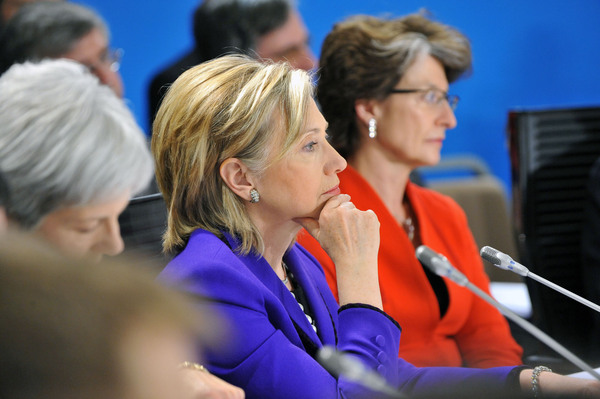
Secretary Clinton Next to Deputy Director Claude-France Arnould

U.S. Secretary of State Hillary Rodham, seated beside Claude-France Arnould (right), Deputy Director, EU Crisis Management and Planning Directorate, listens during the NATO Foreign Ministers Meeting in Tallinn, Estonia, April 22, 2010.